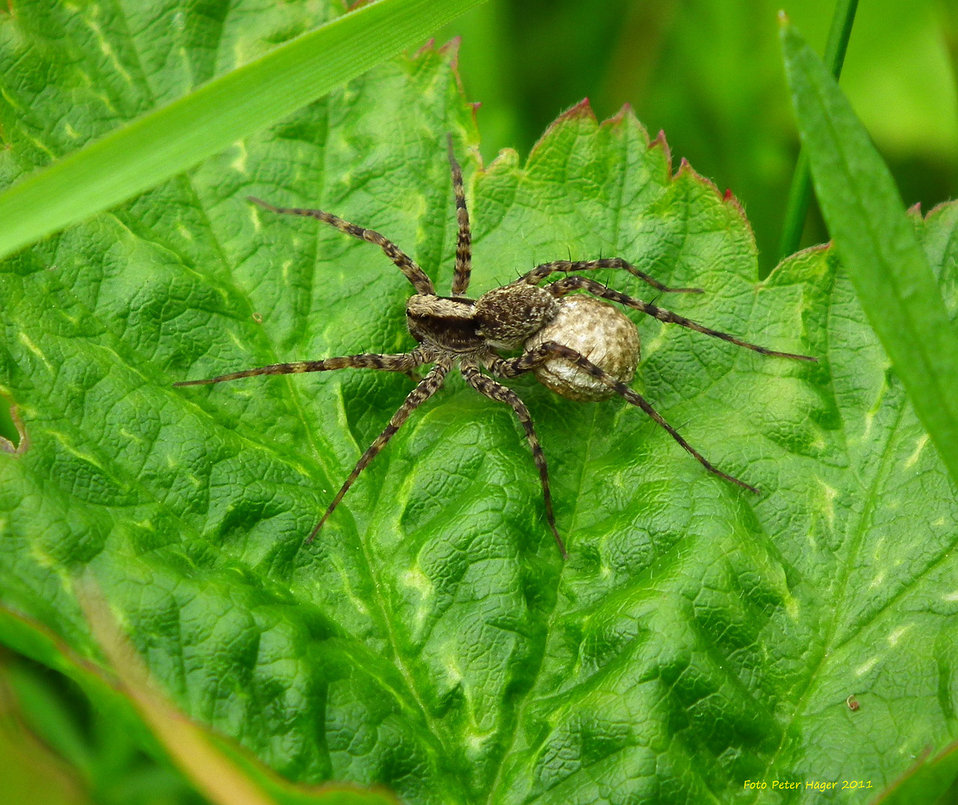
Spider

Some kind of spider.